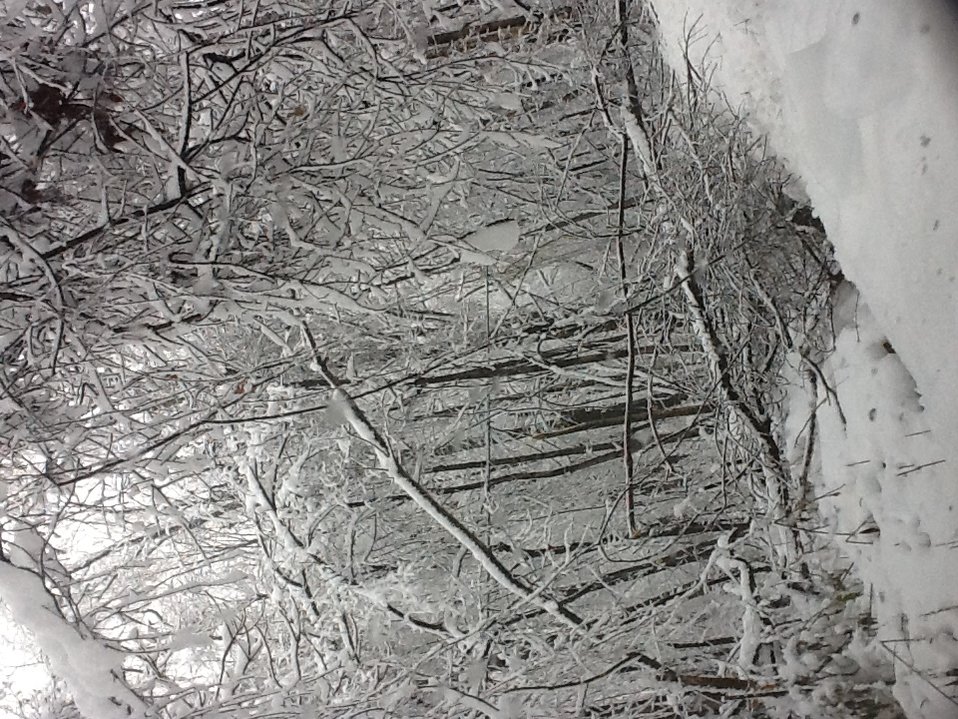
Trees blocking road in Elkins, (WV)

Snow fall resulting from Hurricane Sandy in WV has snapped tree limbs and knocked down entire trees making some roads impassable.